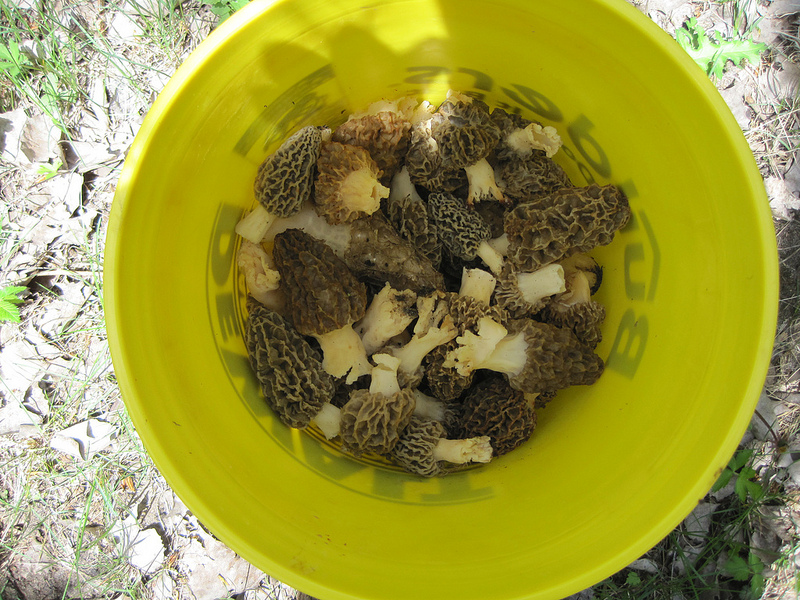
Productive Lunch Break

These tasty morel mushrooms were picked over the noon hour while out conducting surveys for the Platte River caddisfly.

Location: Woodlands along the Platte River near Elm Creek, Nebraska

Credit: Lindsay. Vivian / USFWS

Photo Contest Entry #44